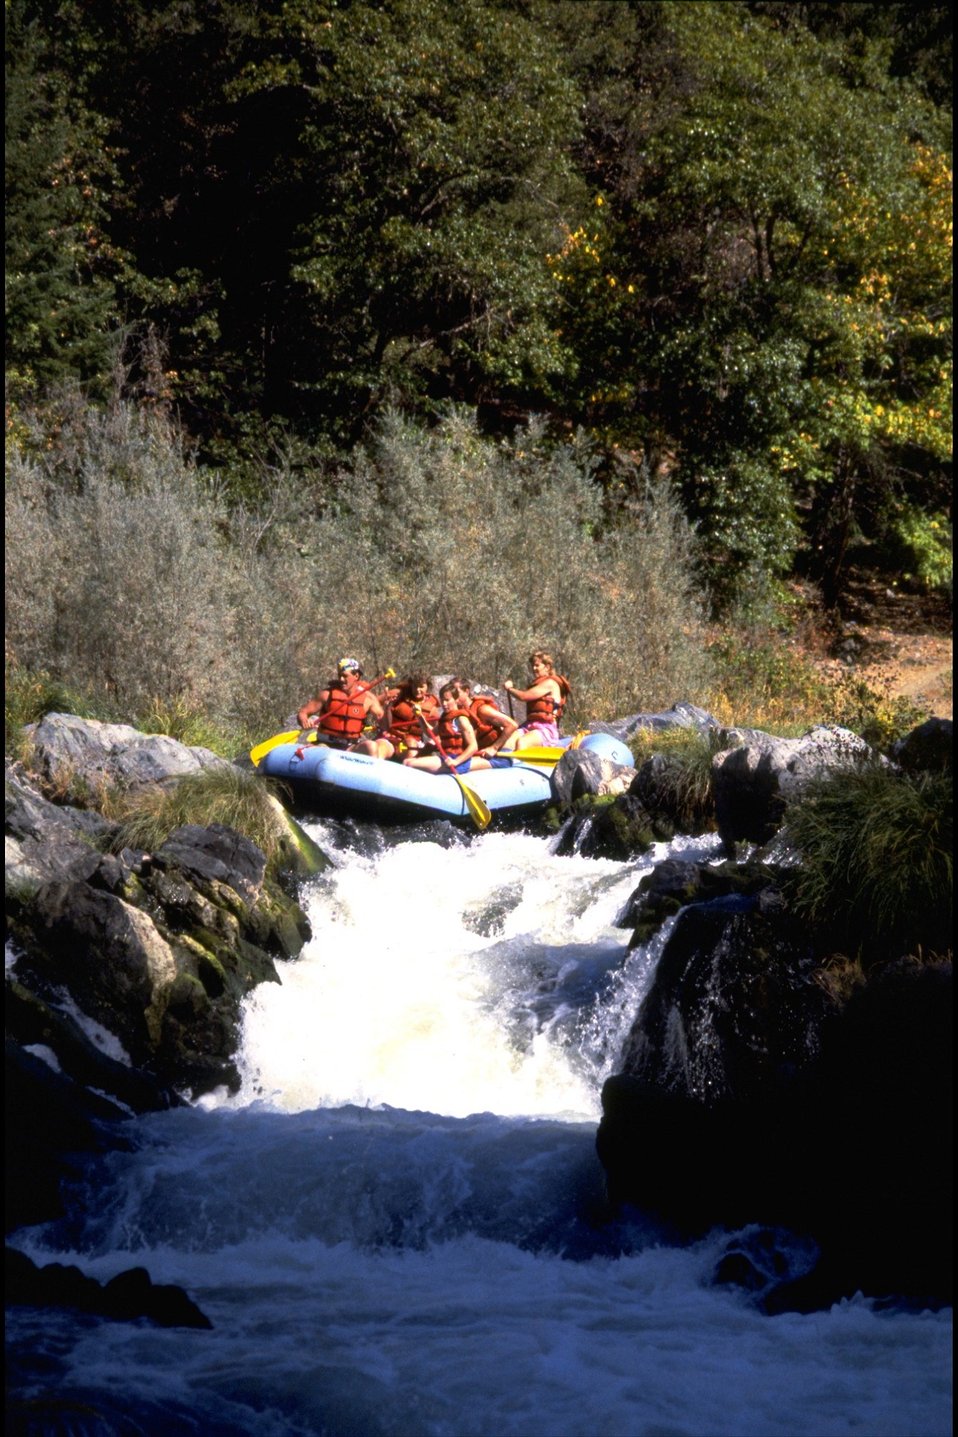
Rogue River - Rainie Falls, wild section. Middle chute at 950 cfs.